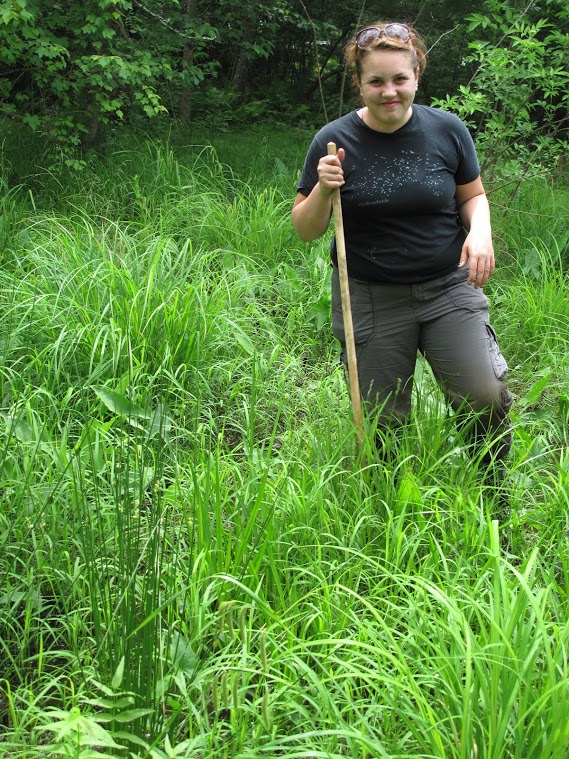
Bog turtle

Scientific name: Clemmys muhlenbergii
Status: Threatened and similarity of appearance

On the lookout for bog turtles.